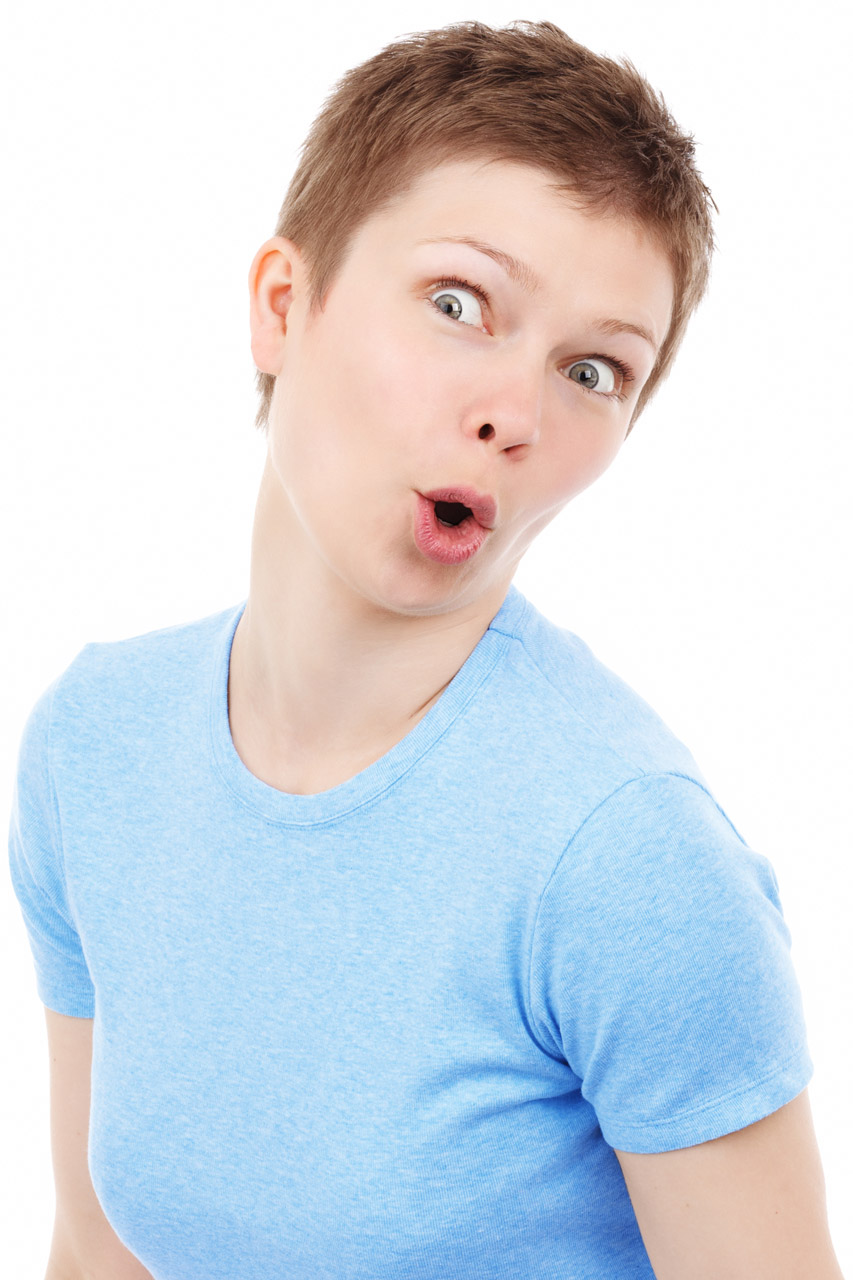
Shocked woman

Shocked young woman in blue t-shirt isolated on white background.